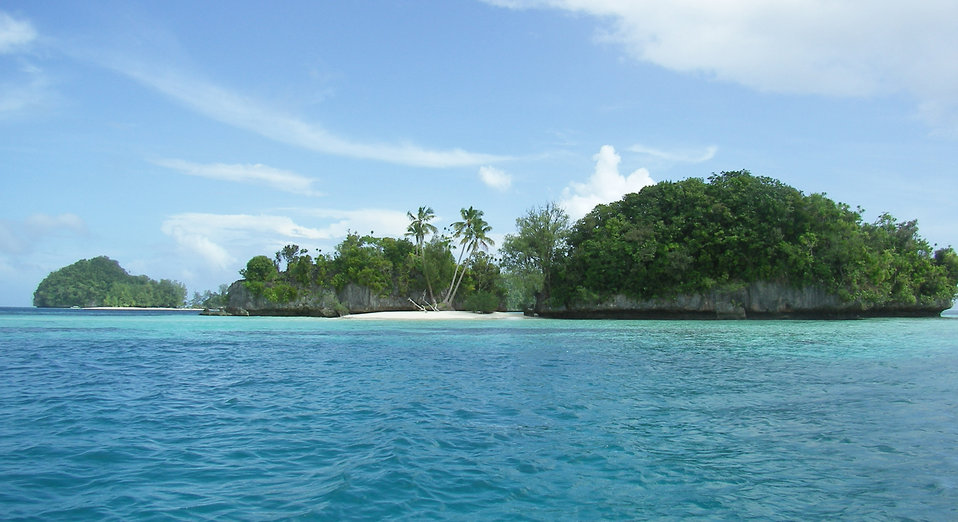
Deutsch: Rock-Islands, Republik Palau